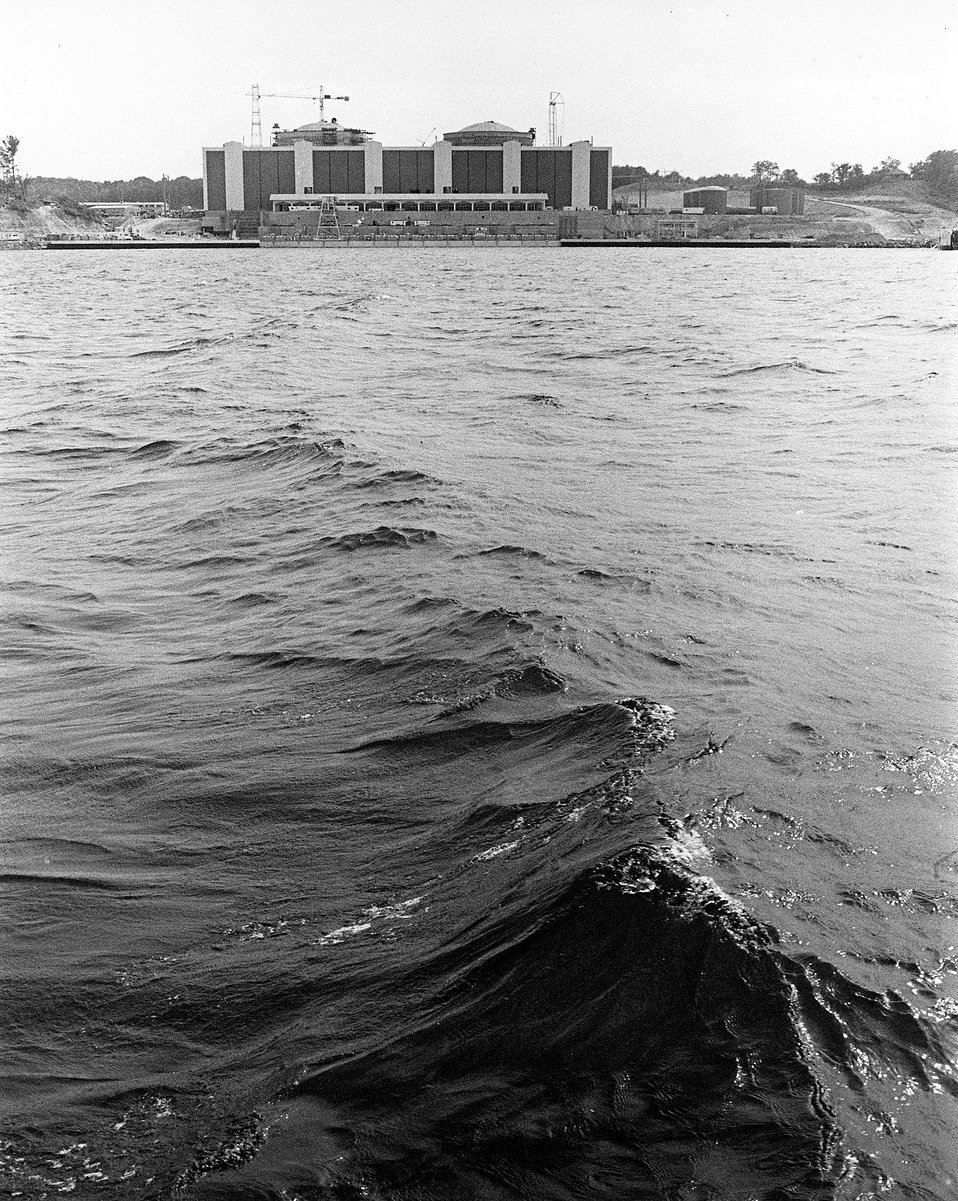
The waters of the Chesapeake Bay will be used to cool the two nuclear electric generating units shown under construction in the background. Circa 1972.